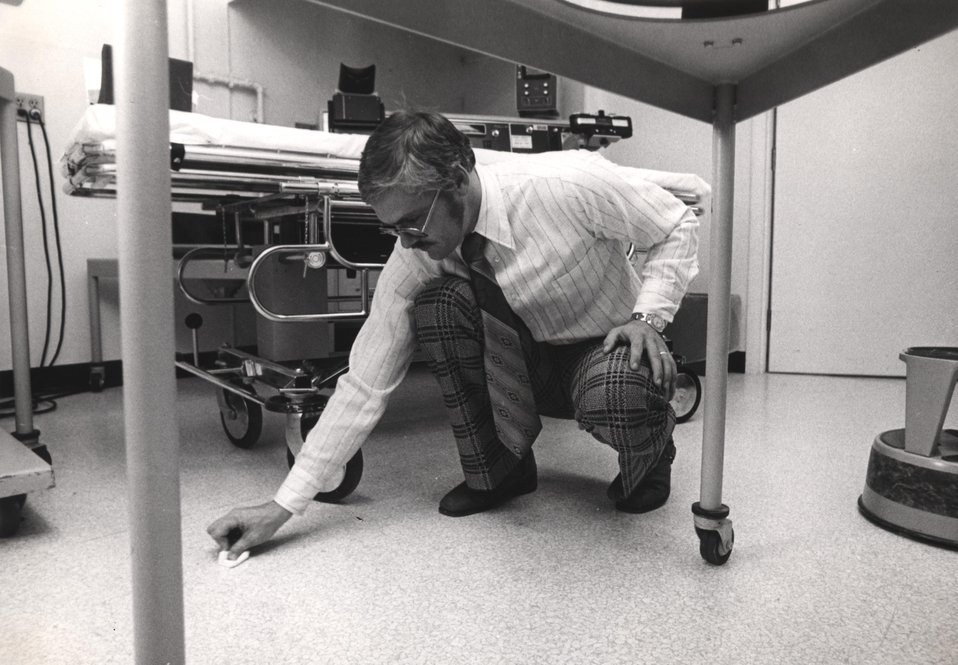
During an AEC inspection of a licensed hospital, the inspector swabs the floor to test the possible radioactive contamination.